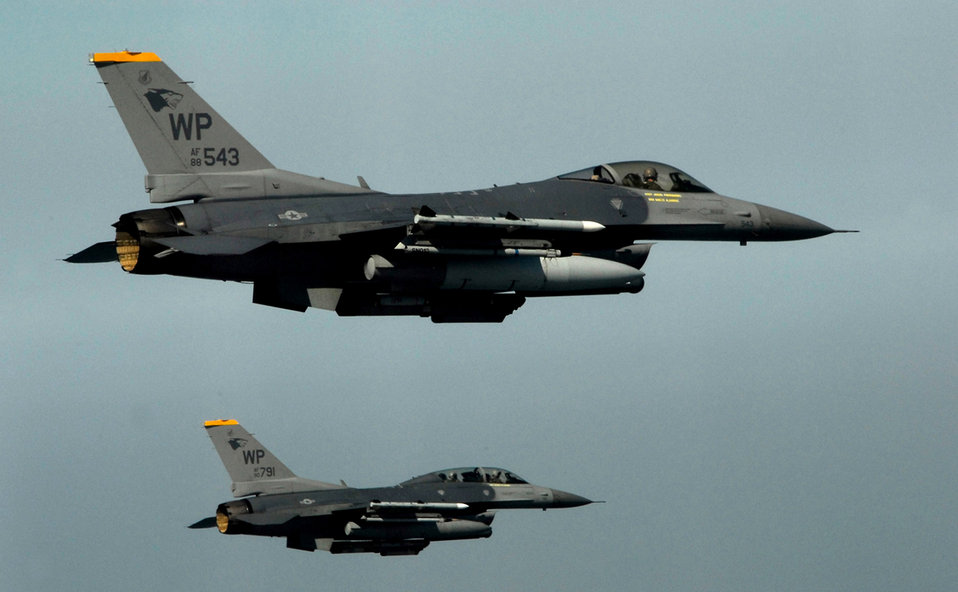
Kunsan Airmen exercise with RSAF

Pilots from the 80th Fighter Squadron fly a training mission over the South Korean peninsula in F-16 Fighting Falcons. Pilots assigned to the 80th FS utilize training missions to simulate actual conditions they may face in combat and keep their war-fighting skills honed.